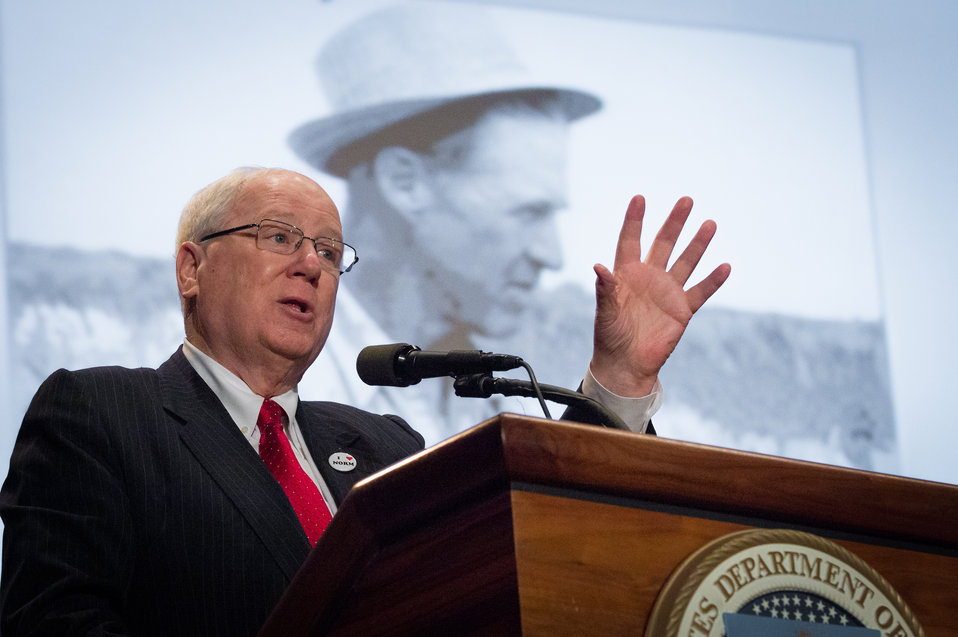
World Food Prize Ambassador Ken Quinn introduces the second panel moderator for the Borlaug Symposium Binghamton, NY high school student Nosa Akol, participates in the discussion panel titled 'I am Dr. Borlaug's Vision - I Can Make a Difference' during the Borlaug Symposium commemorating the late Dr. Norman E. Borlaug's 100th Birthday hosted by the U. S. Department of Agriculture (USDA) in the Jefferson Auditorium of USDA in Washington, D.C. on Tuesday, Mar. 25, 2014. The symposium highlighted current efforts addressing global hunger.